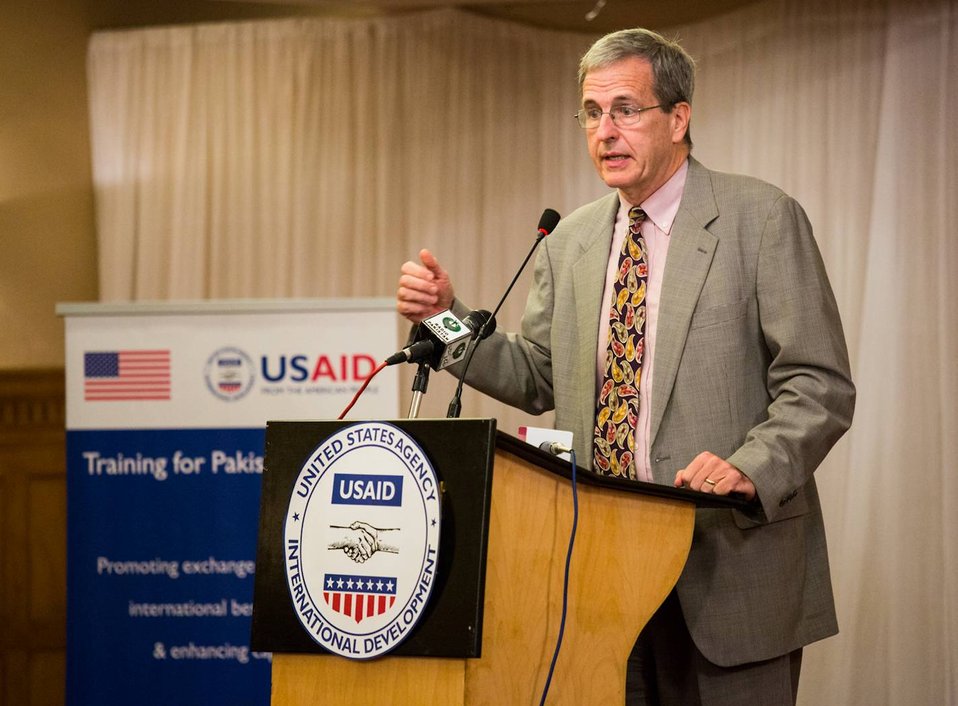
Islamabad, September 26 2012 - “By using modern techniques, Pakistani farmers can capture new customers and increase their profits. The United States is committed to helping Pakistan modernize its agriculture sector so that farmers can improve their livelihoods.” said Jonathan Conly, USAID Pakistan Mission Director.